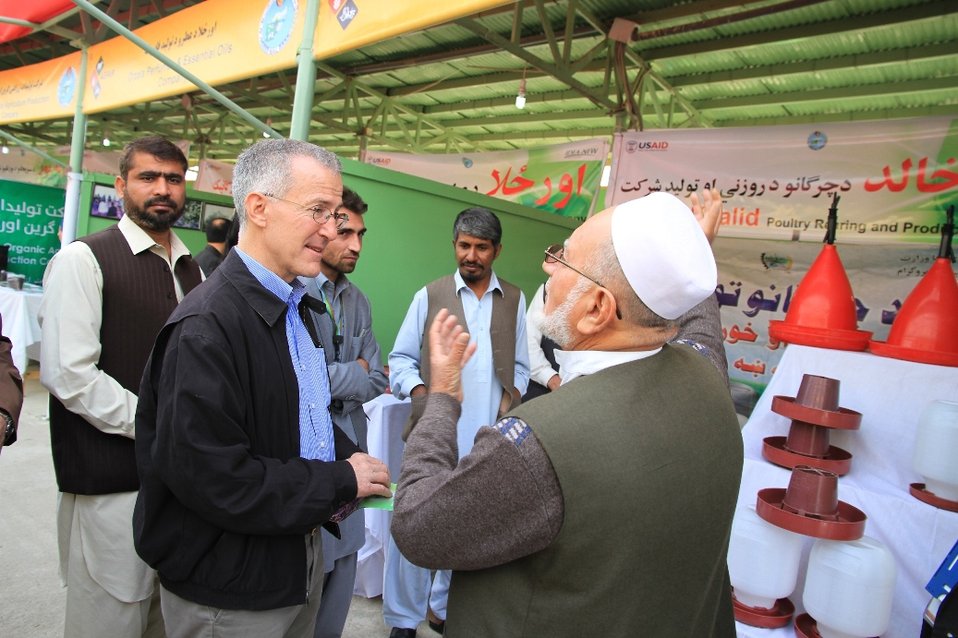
Ag.Fair, October 2013